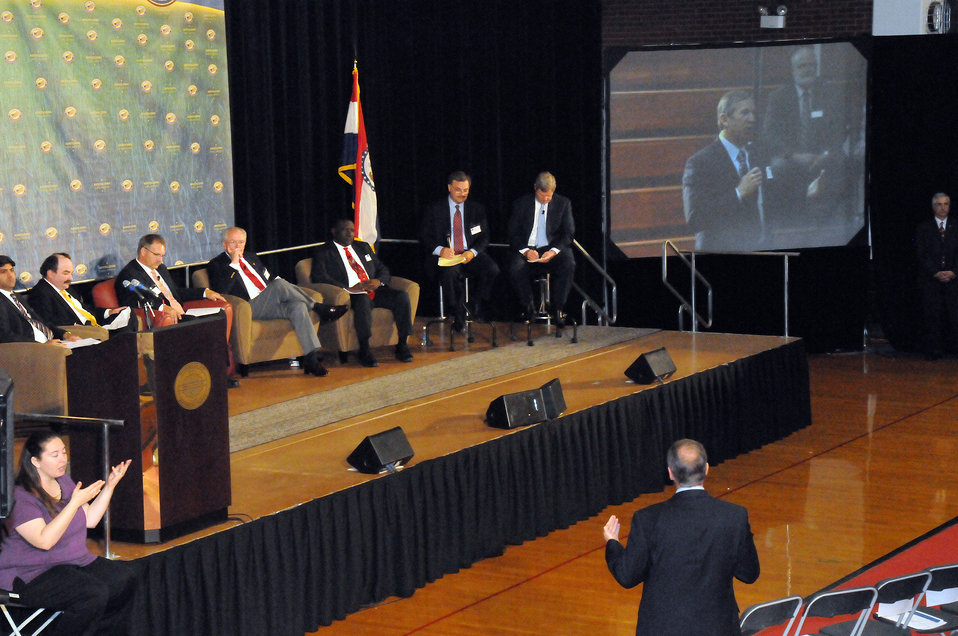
A member of the audience asks a question during a Dialogue on Rural America was the first discussion panel held at the National Rural Summit held at Jefferson College in Hillsboro, MO., on Thursday, June 3, 2010. (Panelists L to R Chief Technology Officer and Assistant to the President Aneesh Chopra, President of Show Me Energy Steve Flick, President of National Corn Growers Association Darrin Ihnen, Past President of National Association of Conservation Districts John Redding, Mayor of Philadelphia, Mississippi James Young, Agriculture Broadcaster at WGN radio Max Armstrong, and Agriculture Secretary Tom Vilsack). USDA photo 10di1386-215.